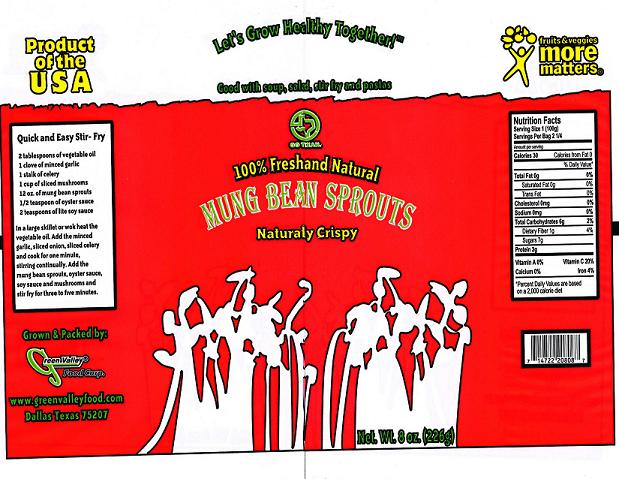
RECALLED - Sprouts

January 3, 2012 - Product Recall - Green Valley Food Corp. Expands Voluntary Recall: Product List Updated Photos.For additional information, please refer to the company issued press release available on FDA's web site at www.fda.gov/Safety/Recalls/ucm285641.htm.